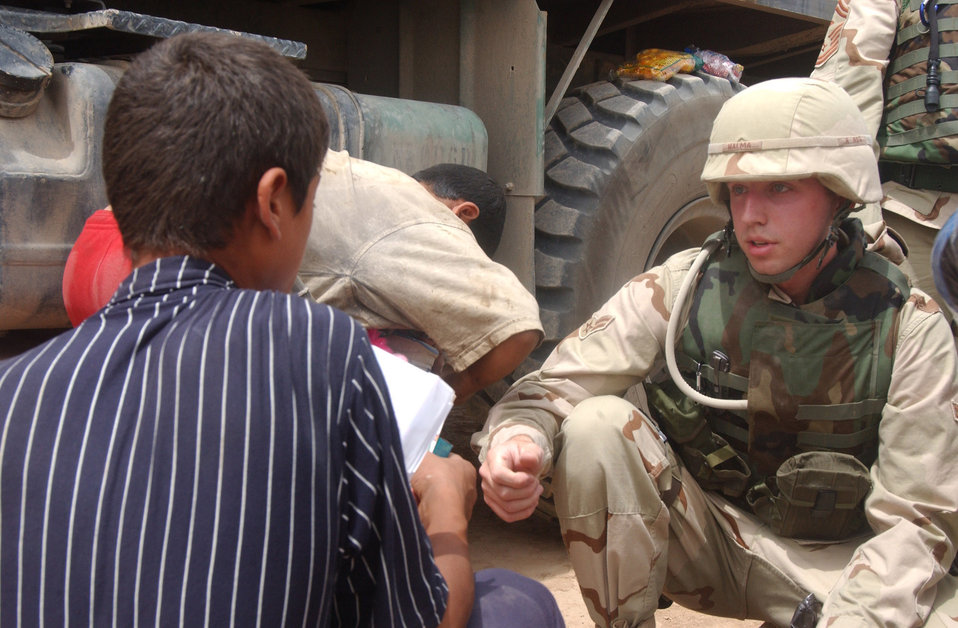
Chaplains do good works for Iraqi neighbors

IRAQ -- Airman 1st Class Cory Halma gives supplies to a local boy during a humanitarian trip. Airman Halma volunteered to travel off the base to help improve relations between Balad Air Base Airmen and their Iraqi neighbors. He is assigned to the 332nd Expeditionary Communications Squadron.